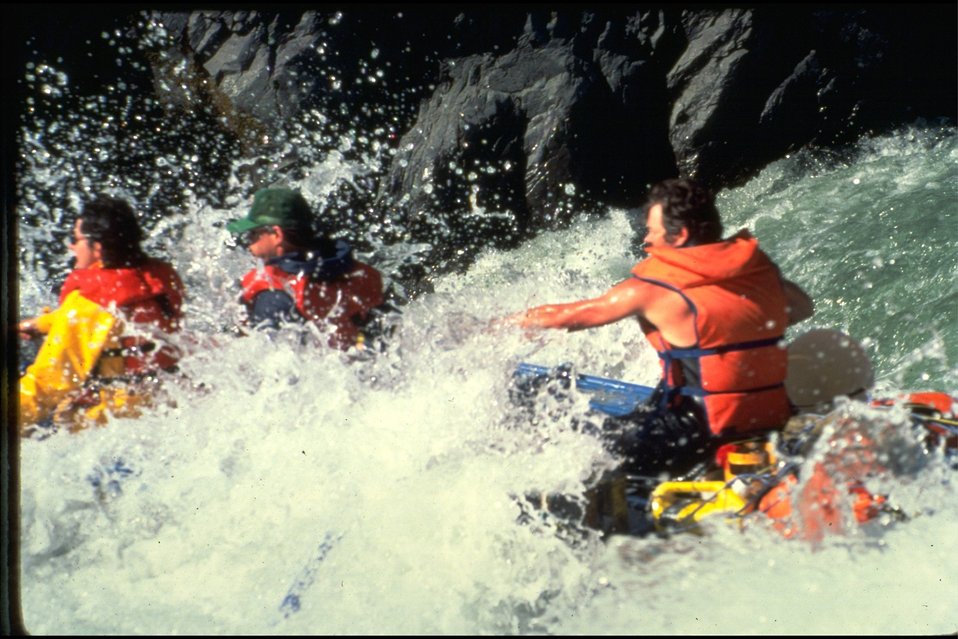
Rogue River - Wild section. Raft in rapids.